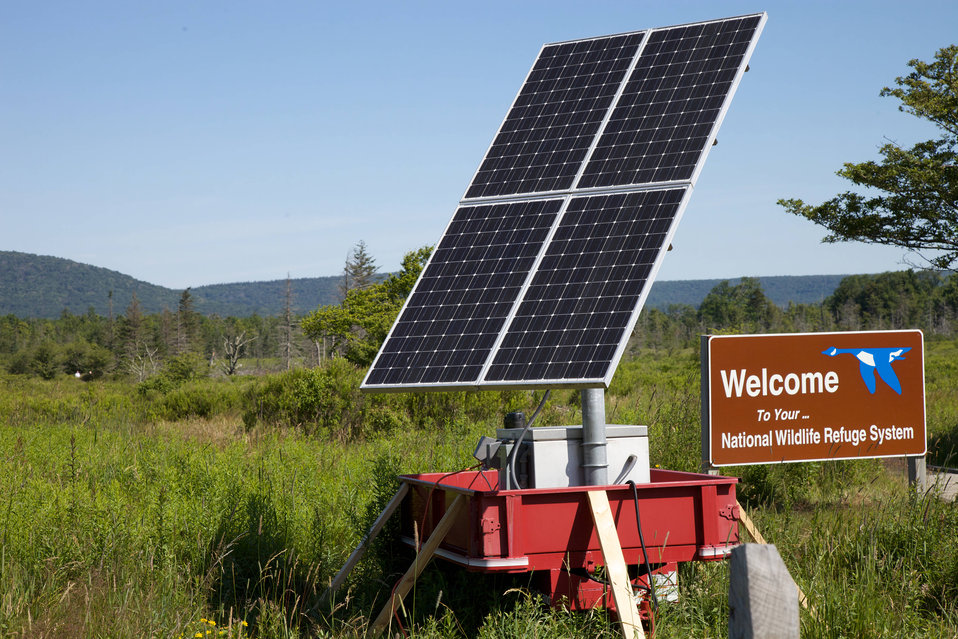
Solar Panel

Photo credit: USFWS/Rachel Molenda

Ecological impacts from alternative energy development can be minimized by focusing siting options on already disturbed or degraded areas